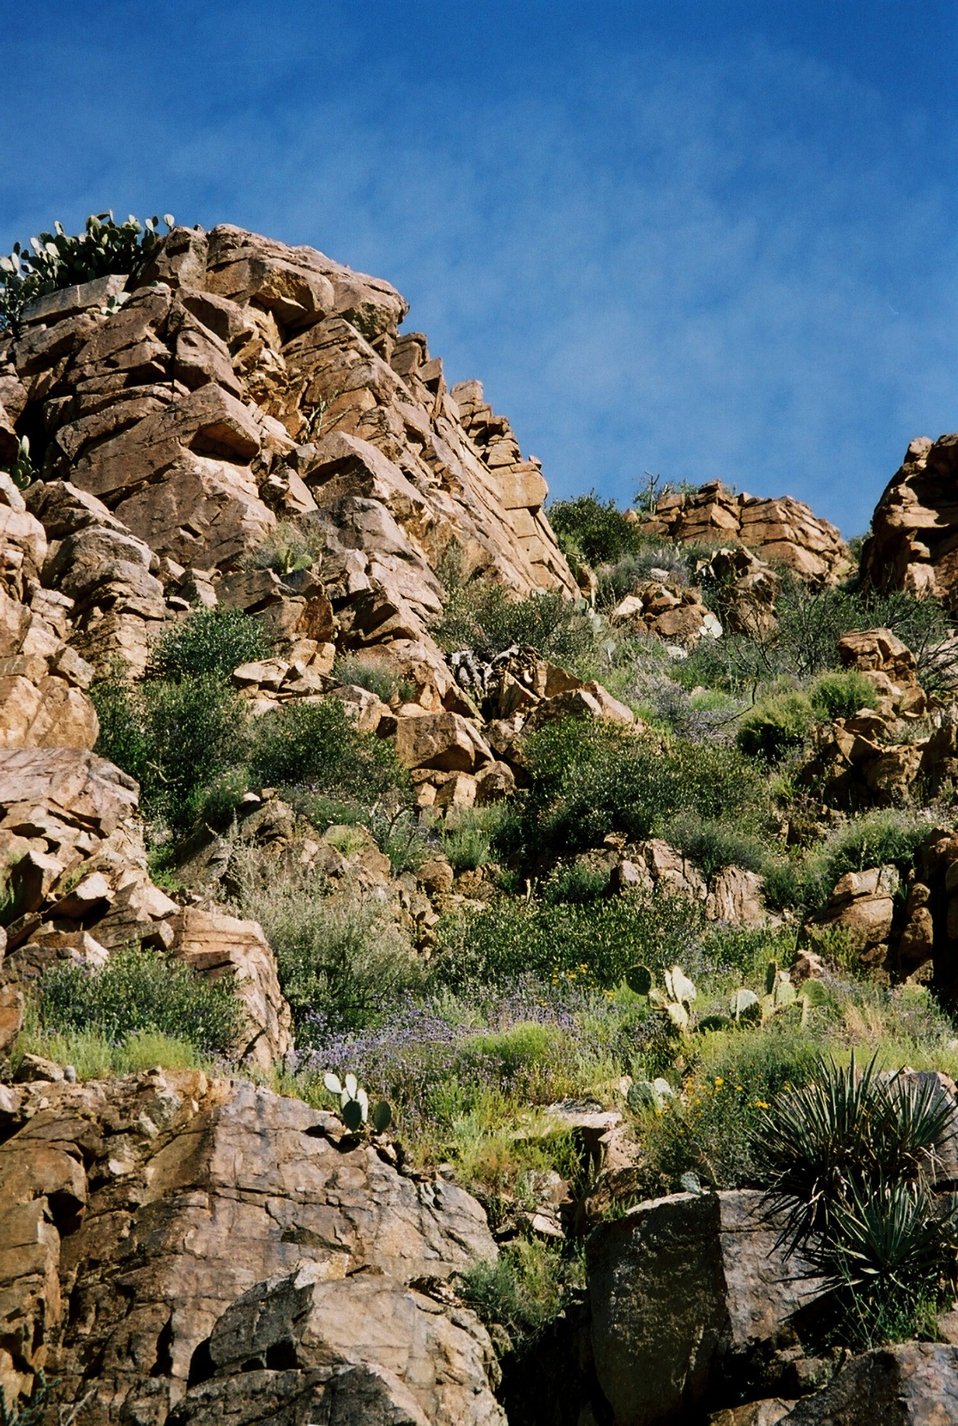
President Bill Clinton designated the Agua Fria National Monument in January of the year 2000.